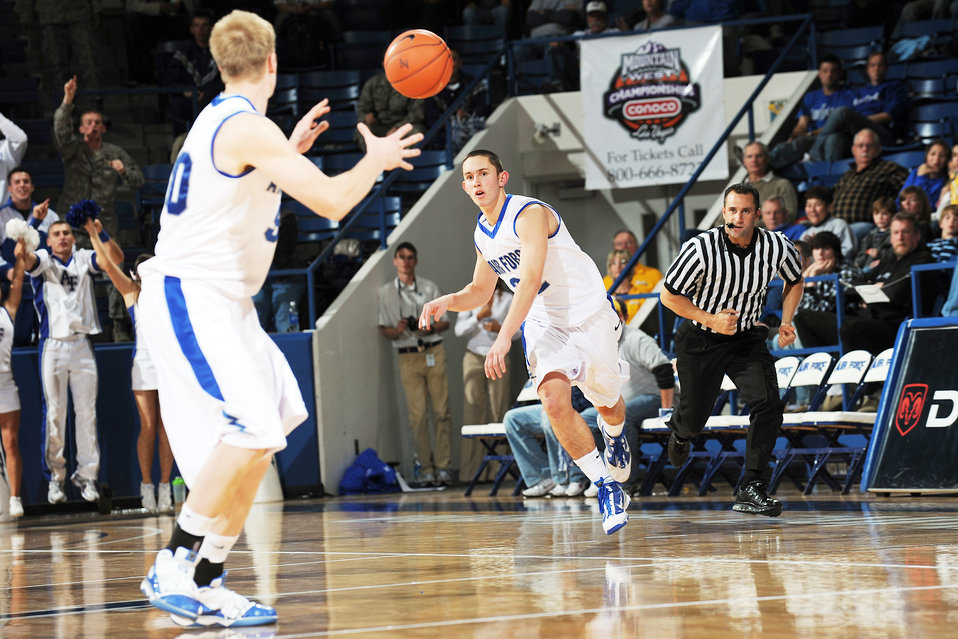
Falcons reign supreme in season opener

U.S. Air Force Academy Falcon sophomore Shawn Hempsey passes the ball to senior Grant Parker during the season opener at Clune Arena Nov. 13, 2009 at the U.S. Air Force Academy, Colo . The Falcons defeated the Mountaineers 65-54.